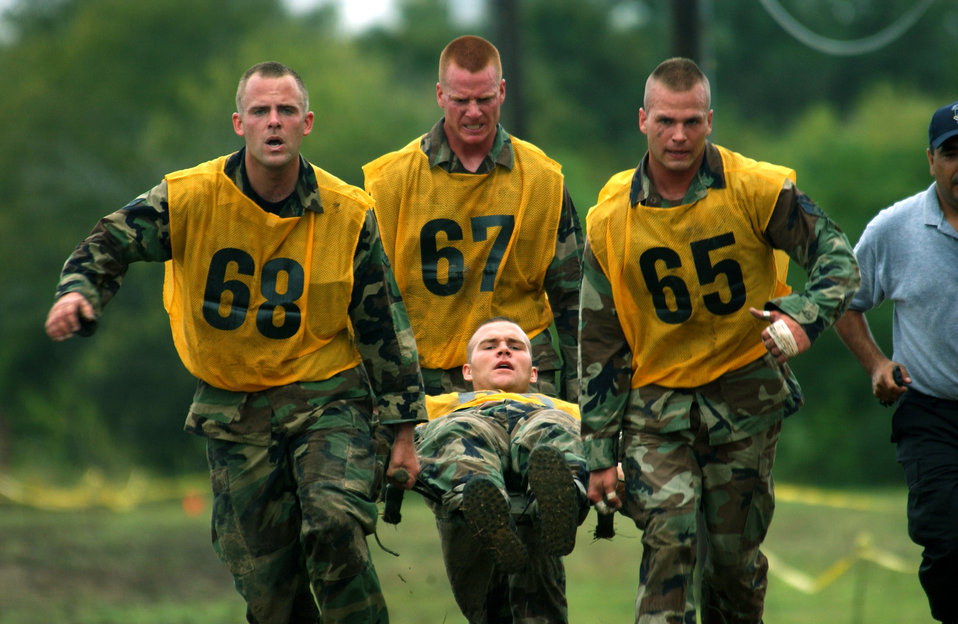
Defender Challenge 2004

LACKLAND AIR FORCE BASE, Texas -- The U.S. Air Forces in Europe Defender Challenge obstacle course team completes the first half of an obstacle course here with a litter carry Oct. 23. Defender Challenge is a security forces competition pitting competitors from major commands against one another over a series of events including marksmanship, tactics and physical fitness.